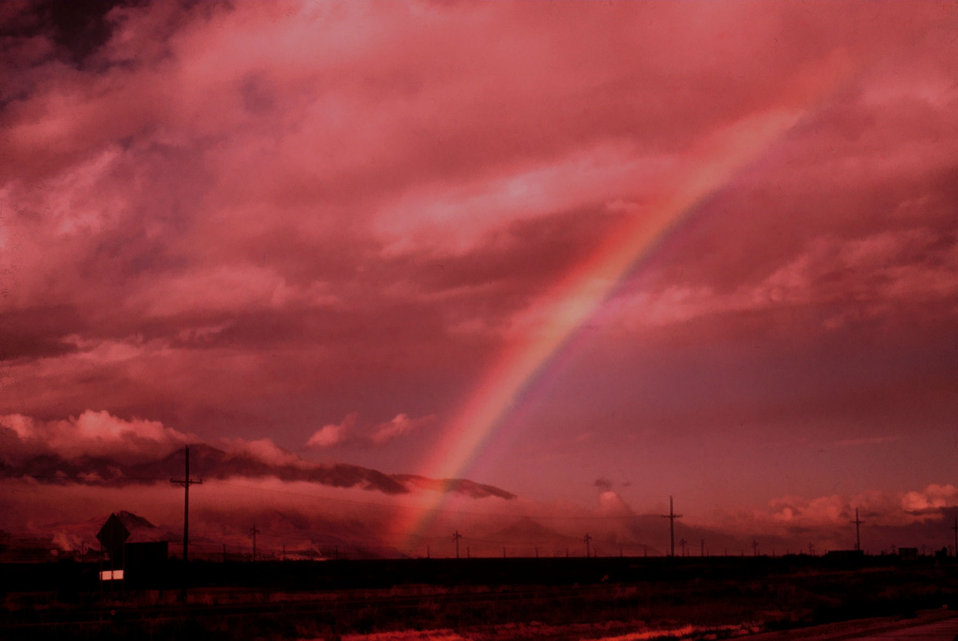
Rainbow